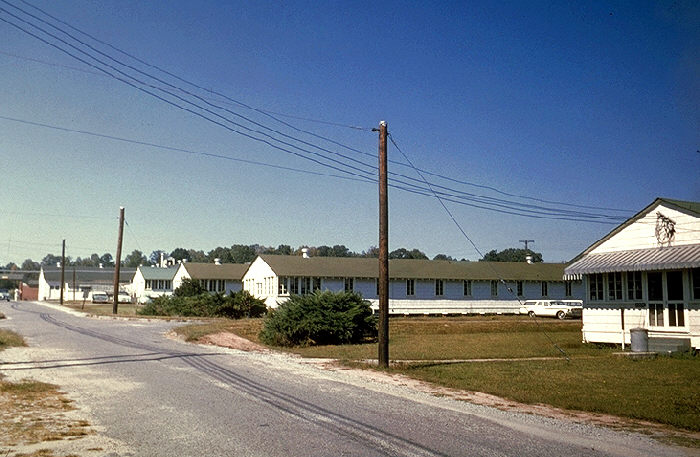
This 1979 image depicts a number of CDC buildings, Chamblee, Georgia.